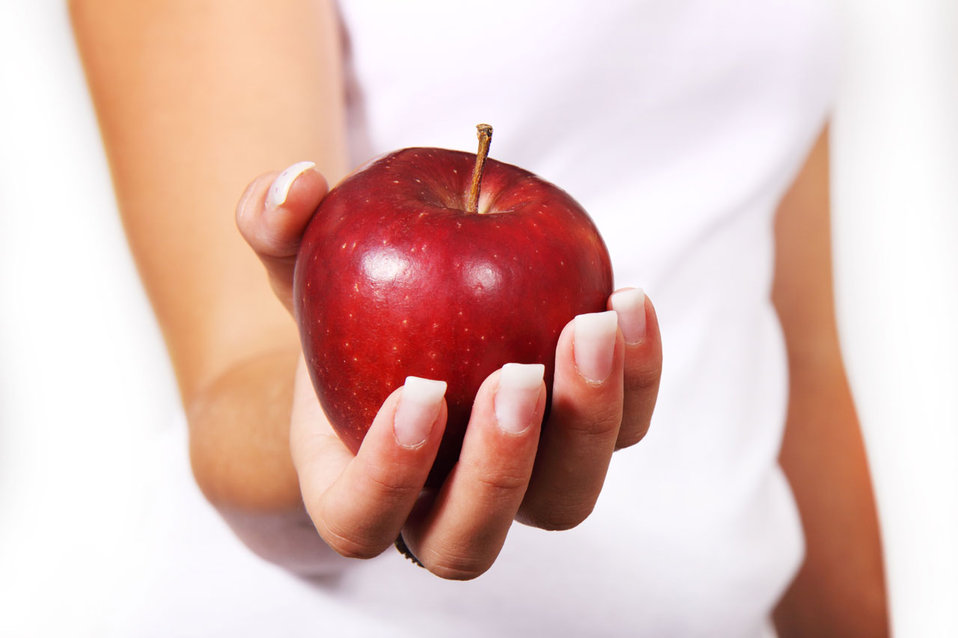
Red apple in hand

Red apple in woman's hand.